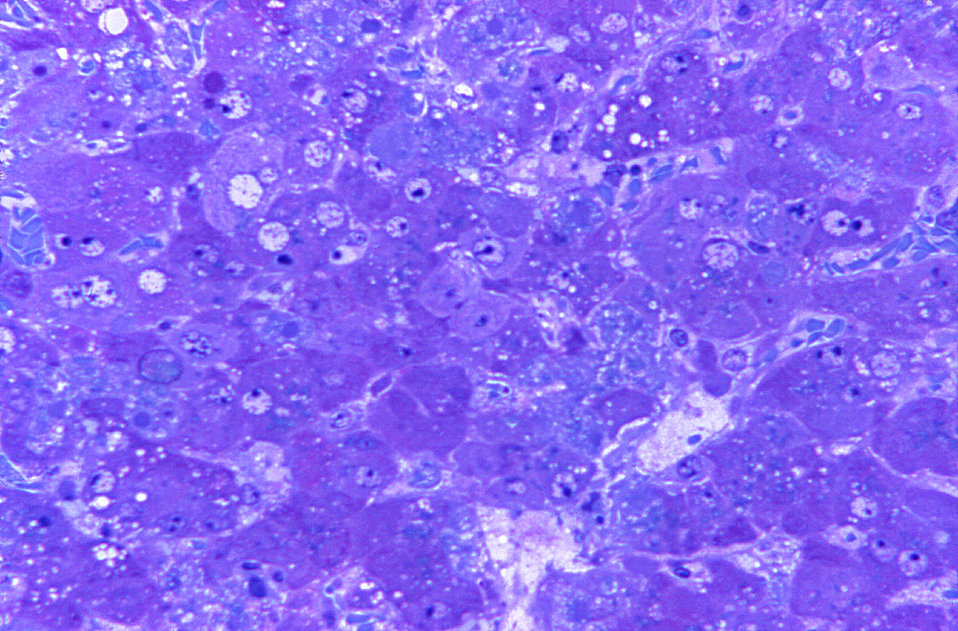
A photomicrograph of hepatitis caused by the Lassa virus, using toluidine-blue azure II stain, magnified 315X.